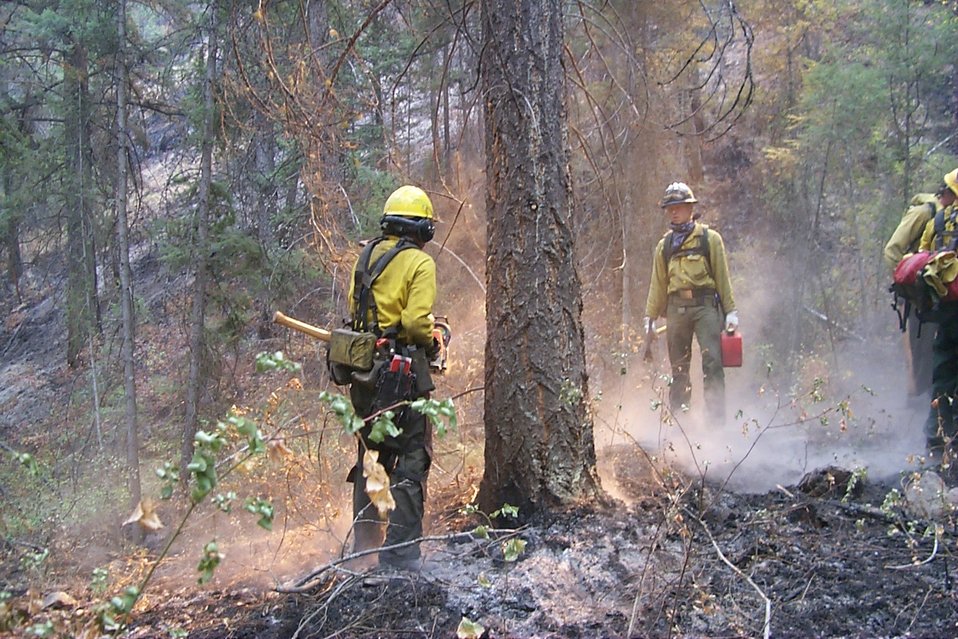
Line crew Fire Clearwater Fire Salmon Field Office USRD Upper Snake River District